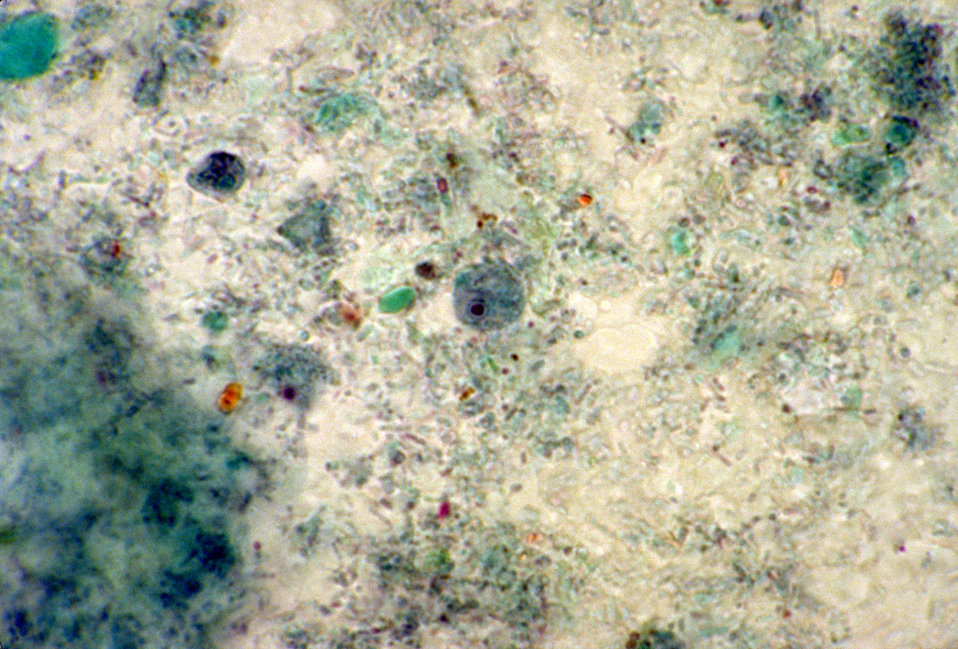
This photomicrograph depicts an amoebic parasite,Endolimax nana, trophozoite